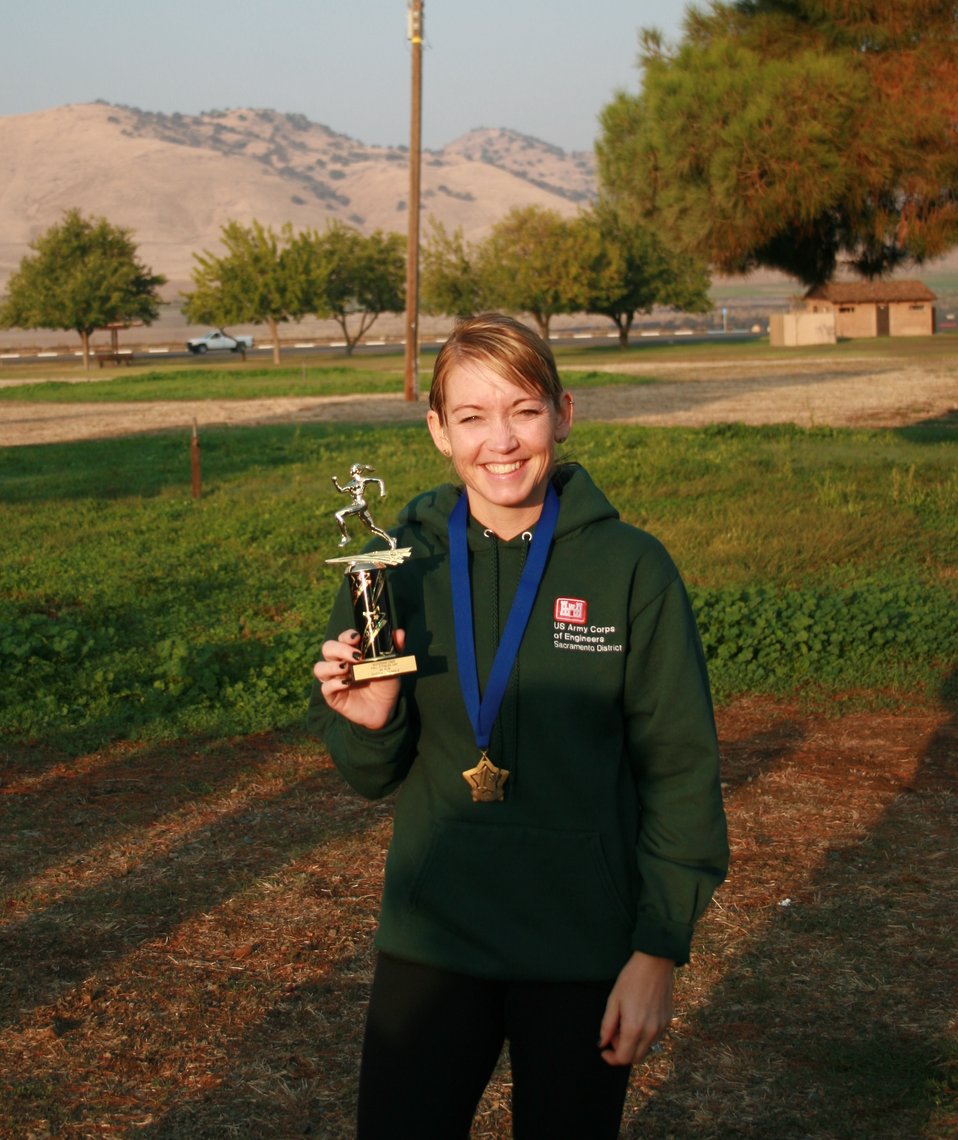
First-ever Fall Fitness Day held at Success Lake

Michele McDonald, a project tech at Success Lake, holds her trophy for finishing first in the female category of the run at the Fall Fitness Day at Success Lake in Porterville, Calif., Oct. 22, 2011. The first-ever event, hosted by the City of Porterville Parks and Leisure Department and the U.S. Army Corps of Engineers Sacramento District, supports President Barack Obama’s America’s Great Outdoors initiative to re-connect Americans with the outdoors.